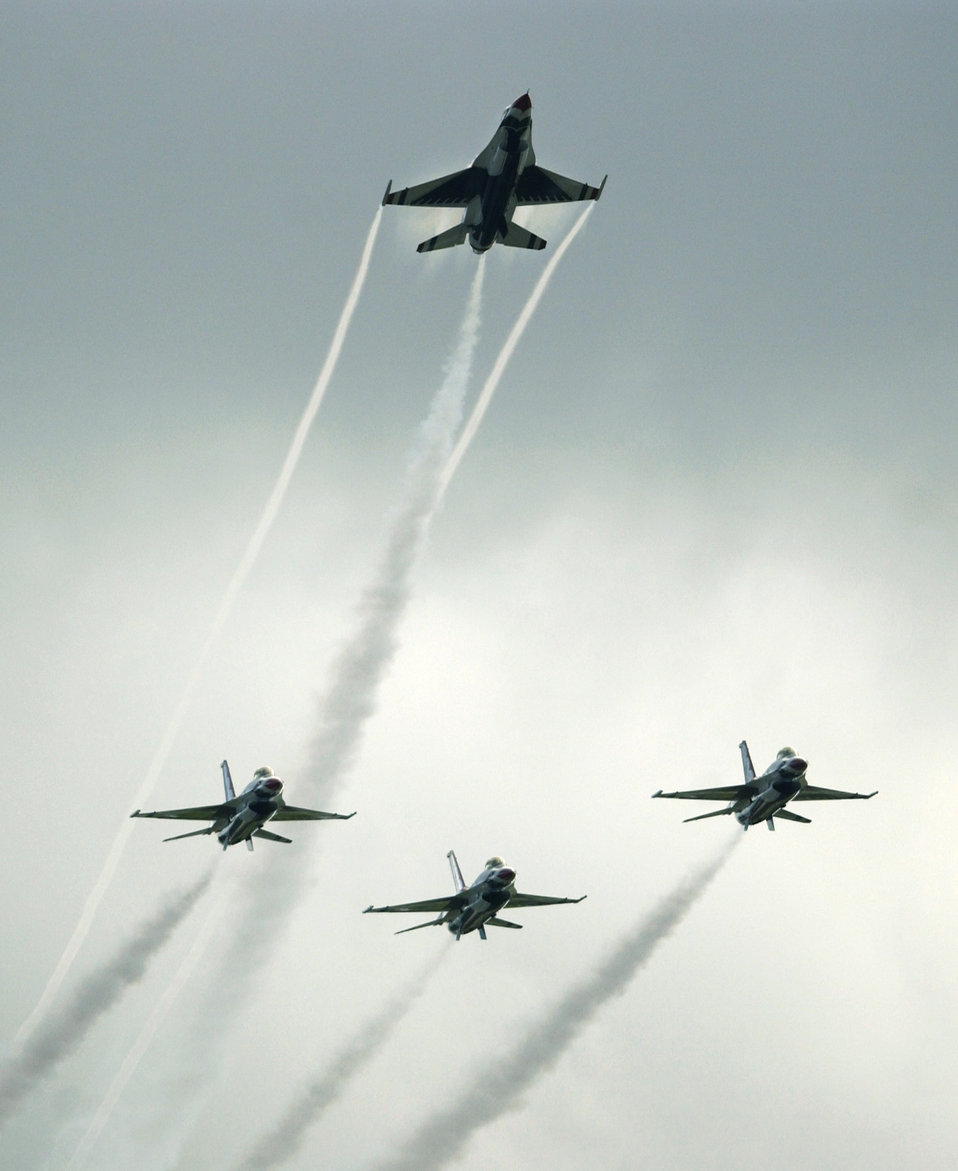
Thunderbirds

ANDERSEN AIR FORCE BASE, Guam -- The United States Air Force Demonstration Team